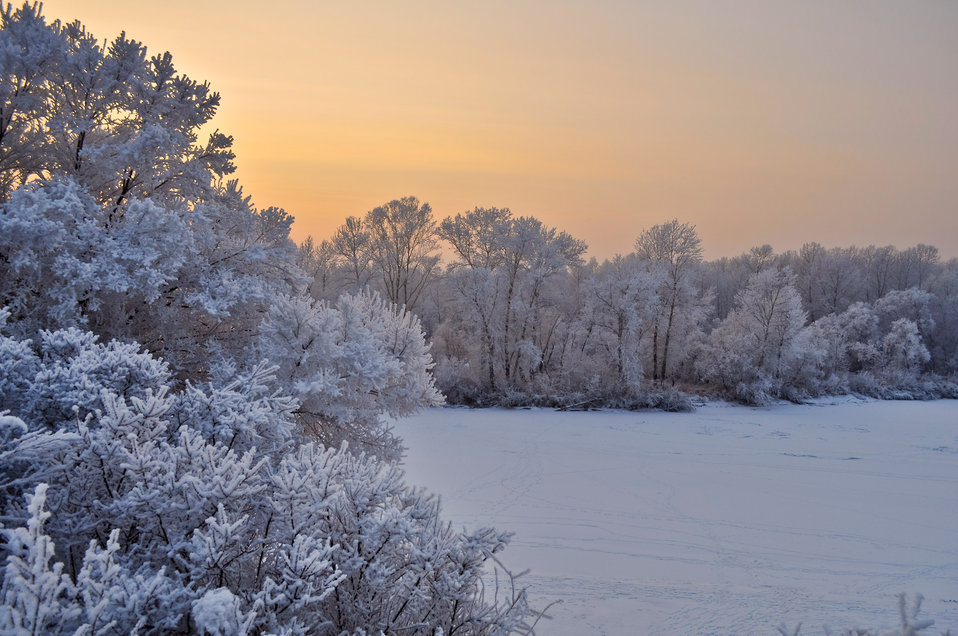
Winter landscape

Trees in the snow at sunset.